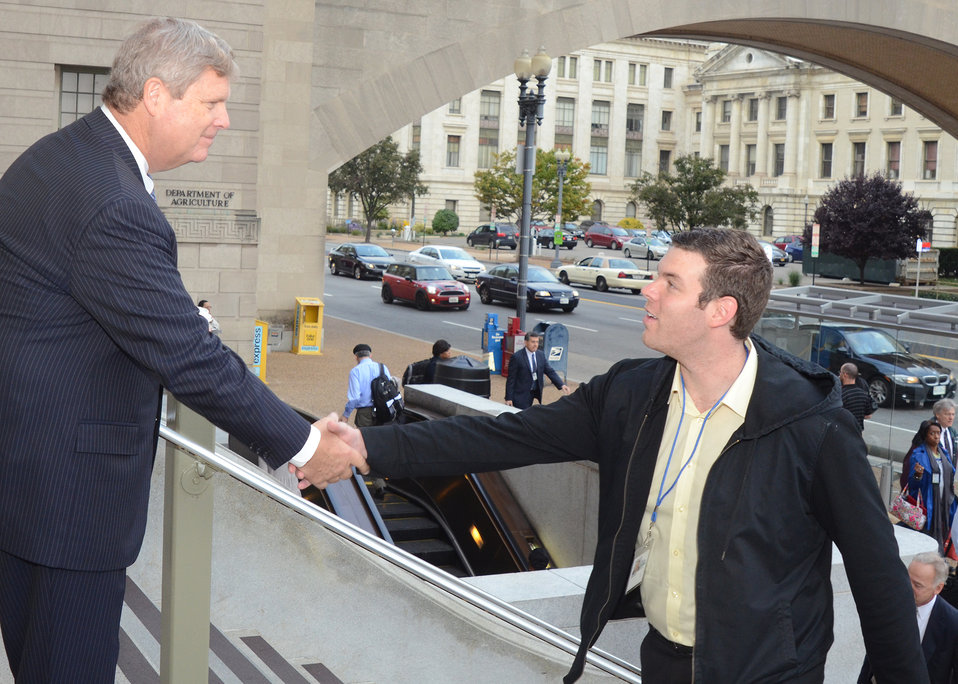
Agriculture Secretary Tom Vilsack welcomes employees back to work on the steps of the U.S. Department of Agriculture's South Building on Thursday, Oct. 18, 2013.